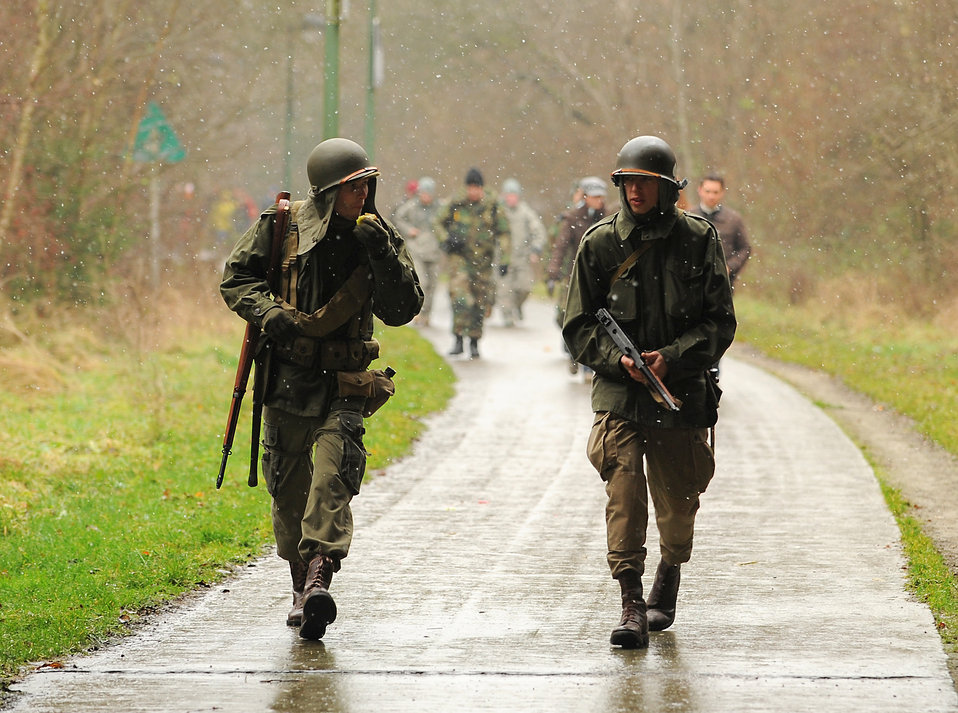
Airmen participate in 32nd Annual Bastogne Historic Walk

World War II re-enactors walk along a trail Dec. 12, 2009, during the 32nd Bastogne Historic Walk in Bastogne, Belguim. Despite the snow and cold, more than 4,500 people from across Europe and the world participated in the event.